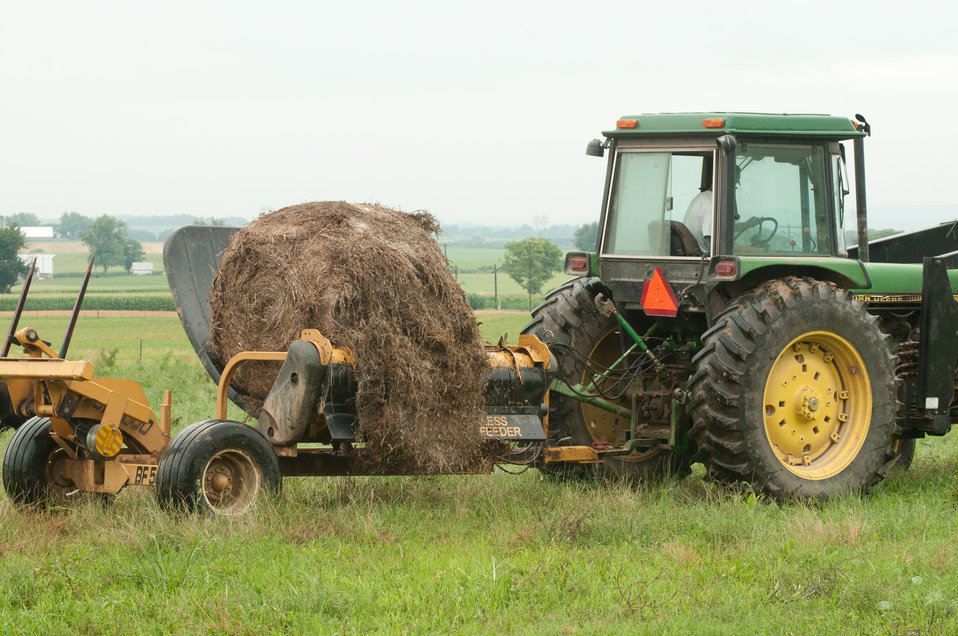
Farm Assistant George Kloph uses a tractor and silage bale spreader to lift and feed the herds of Black Angus cattle at Nick’s Organic Farm, owned by Nick Maravell, in Adamstown, MD on Friday, July 12, 2013. The white plastic wrapped bales of pasture grass and alfalfa have been fermenting for months to create sweet silage that stores well and can be used to feed cattle at varying amount all year long. The fermentation process sweetens the taste and increases the vitamin levels in it. The farm produces Black Angus beef, chicken, turkey, eggs, hay, soybeans, corn, alfalfa, orchard grass, rye; and other crops. The cattle are 100% grass-fed receiving certified organic pasture, certified organic hay (in winter), water and mineral salts mixed with sea kelp. The cattle are not fed hormones, antibiotics or animal products. Poultry feed from grain is ground from organic grain. The poultry also graze on organic pastures. The farm has conducted on-farm research with federal, state and non-profit agencies to refine organic practices. An organization such as the U.S. Department of Agriculture (USDA) Agricultural Research Service (ARS) center in Beltsville has been able to conduct research to improve organic crops and to breed and manage the cattle so that they have.